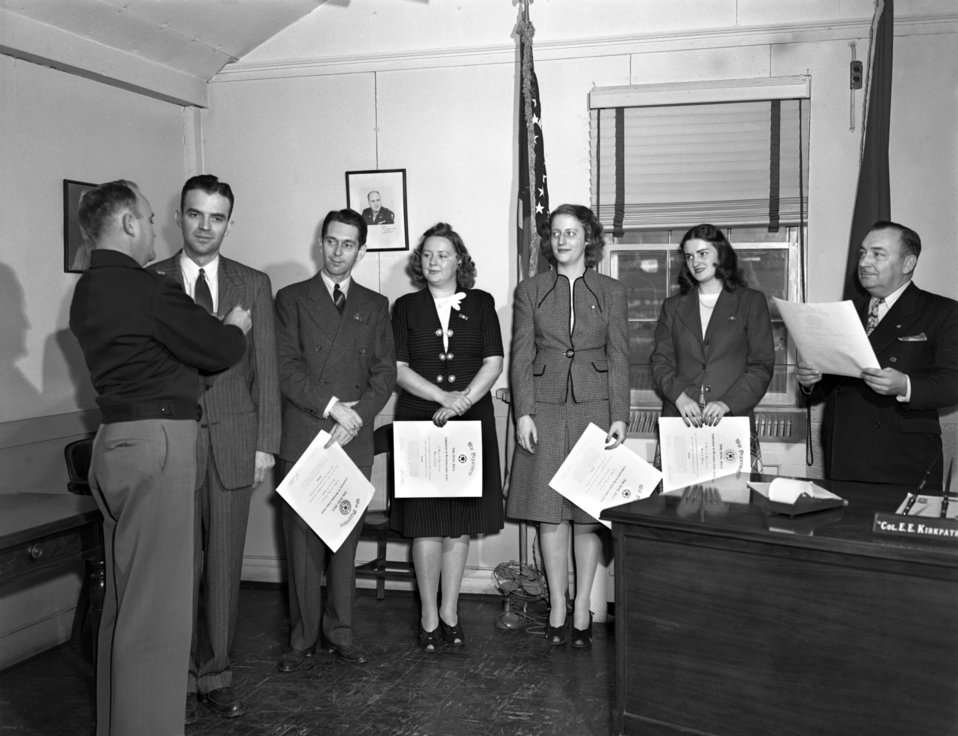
Meritorous Service Awards Oak Ridge 1947

3281-2 DOE photo Ed Westcott 1-27-1947 L to R Lt. Col. C.A. Nelson, Kenneth Fowler, Bernard Stiller, Mark C. Clark, Amelia C. Bradford, Mary Clare Bacon, and William Miller Oak Ridge Tennessee